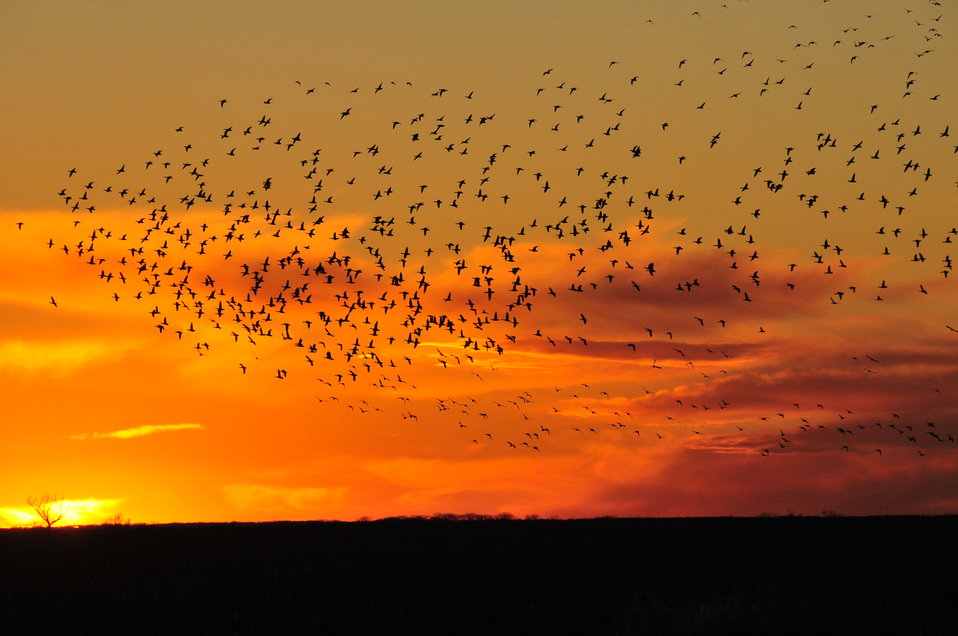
Mallards at Sunset on Sand Lake NWR 02